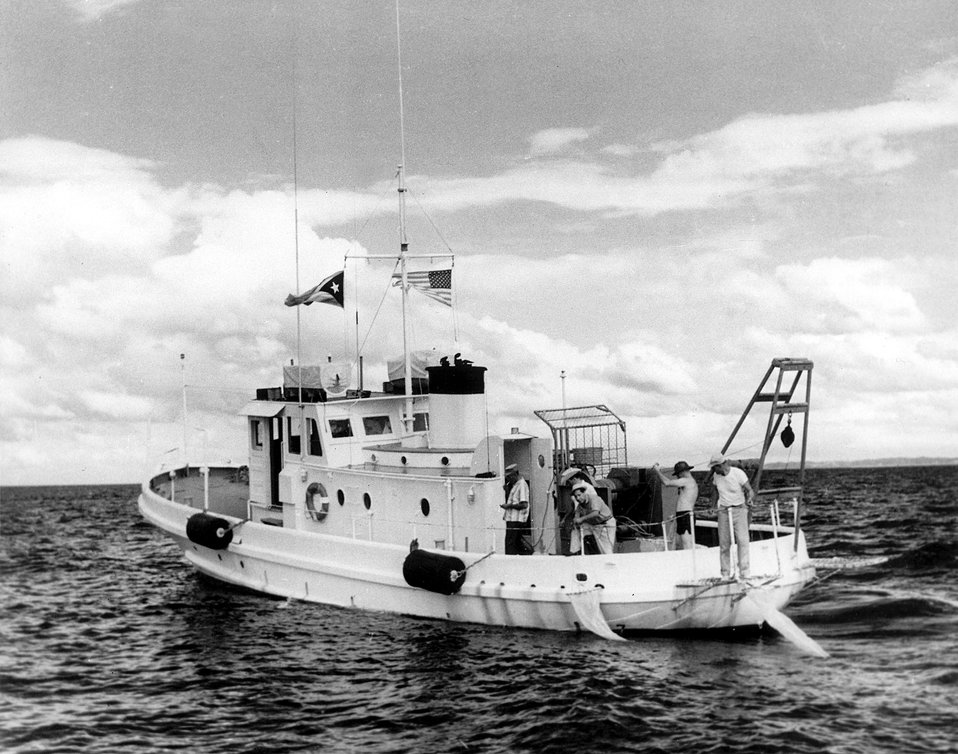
The motor ship 'Shimada,' an oceanographic sampling and research vessel, is used by the AEC's Puerto Rico Nuclear Center in its marine biology program at Mayaguez, Puerto Rice. Circa 1966.